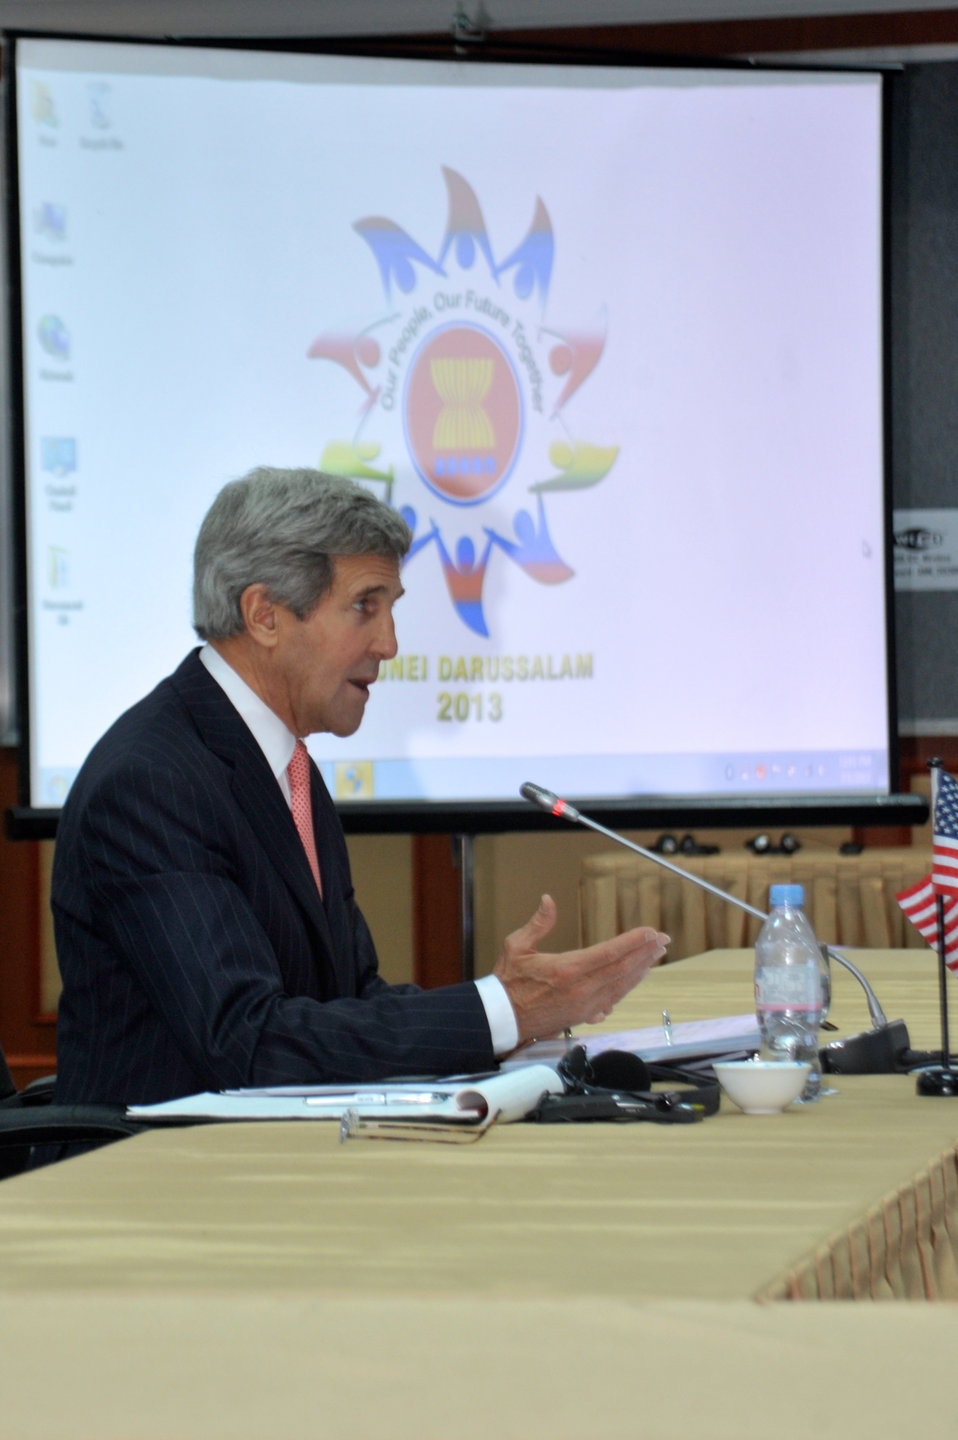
Secretary Kerry Addresses the ASEAN Ministerial Meeting

U.S. Secretary of State John Kerry addresses his fellow foreign ministers at the outset of an ASEAN ministerial meeting in Bandar Seri Bagawan, Brunei Darussalam, on July 1, 2013.